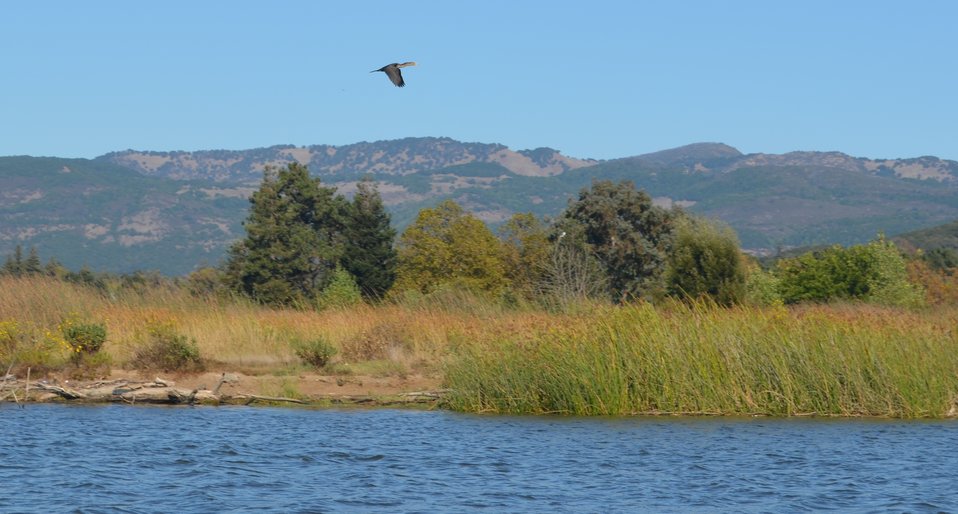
Napa flood risk reduction efforts

Among the many unique features of this project is a beautiful wetlands area. (US Army Corps of Engineers/DeDe Cordell)